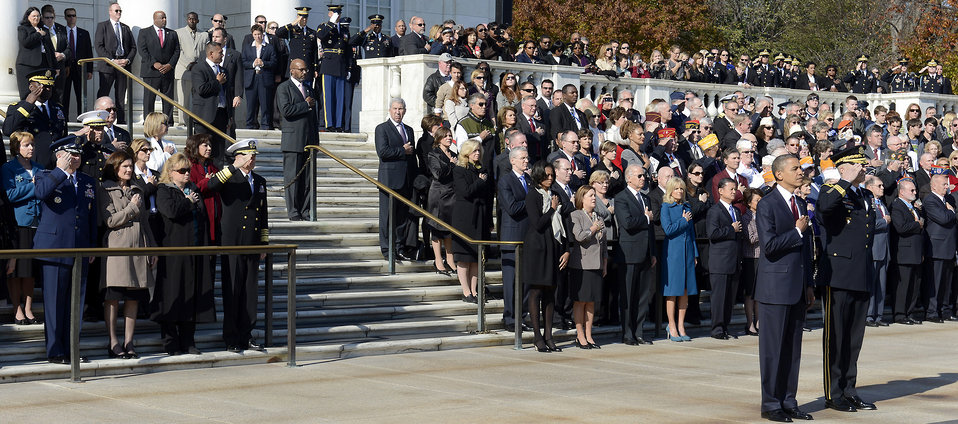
Veterans Day

Air Force Chief of Staff Gen. Mark A. Welsh III and his wife, Betty, attend a wreath-laying ceremony by President Barack Obama at the Tomb of the Unknowns in Arlington National Cemetery in observance of Veterans Day, Nov. 11, 2012.